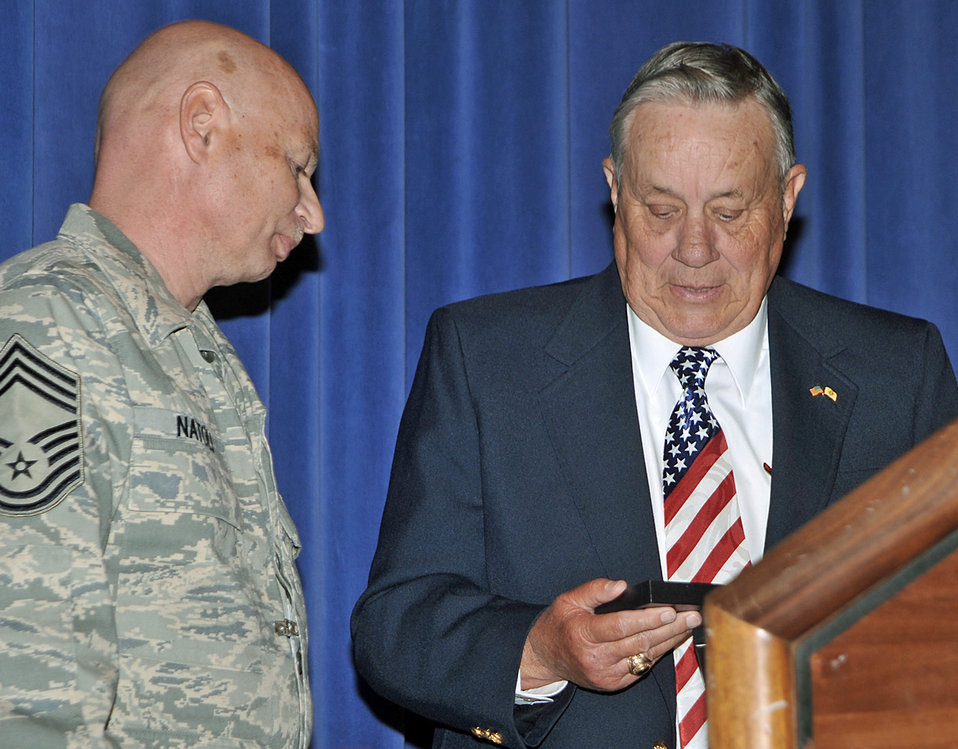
Levitow's pilot lands at Peterson for leadership visit

Retired Maj. Kenneth Carpenter receives a decorative coaster from Chief Master Sgt. David Natoli following his Year of Leadership speech at the Peterson Air Force Base auditorium April 27. The blue and silver coasters, which are made of glass and metal, are given to visiting distinguished visitors as a token of appreciation for their support of Peterson AFB Airmen and the United Stated Air Force. Chief Natoli is the 721st Mission Support Group superintendent.